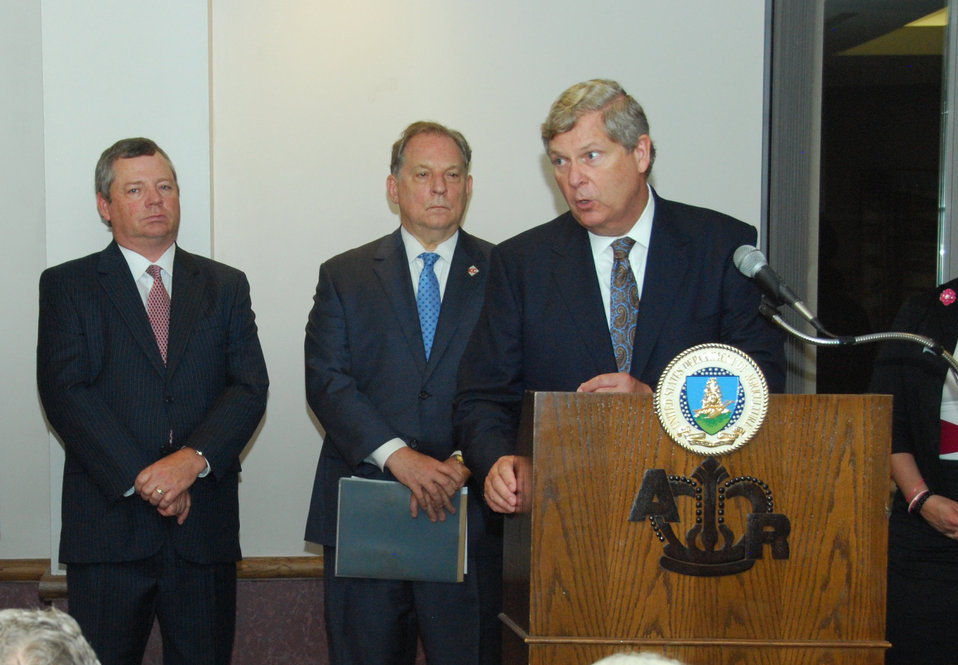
Agriculture Secretary Tom Vilsack makes remarks at the American Royal & Agri-business Council of KC, in Kansas City, MO., on Friday, June 21, 2013. On stage behind Sec Vilsack, from left: Congressman Emanuael Cleaver, 5th District Missouri; Randy Mooney, chairman, Dairy Farmers of America; Jim Heeter, KC Chamber of Commerce; Teresa Garza Ruiz, MO state representative and former Labor rep; Brian Hemann, Kansas dairy farmer; Bob Petersen, executive director, The Agricultural Business Council of Kansas City/ president and CEO of American Royal Association.